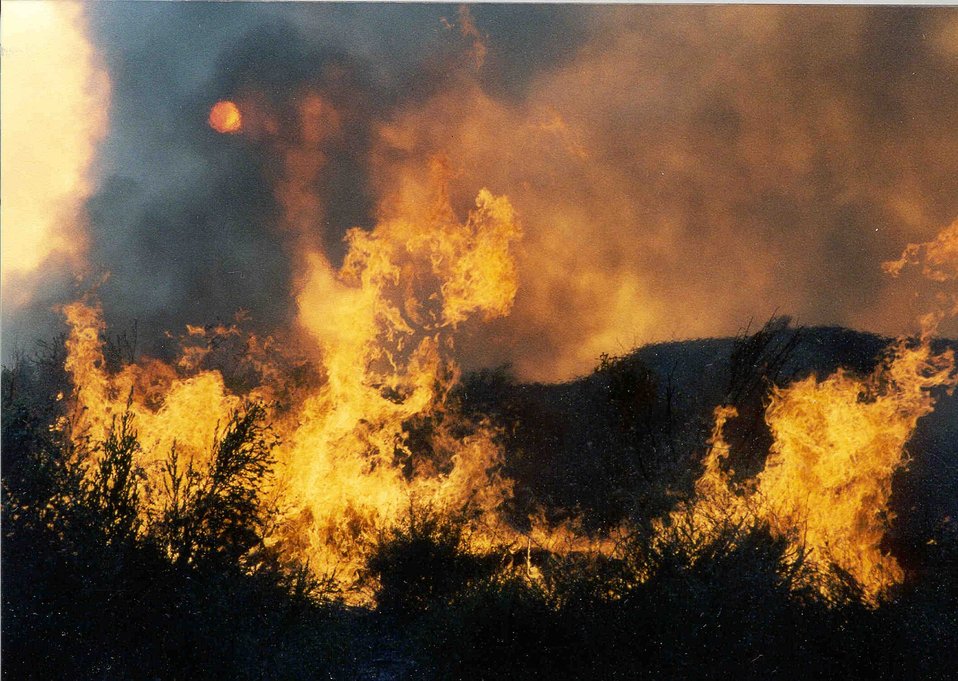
The sun tries to peak through smoke during a wildfire.